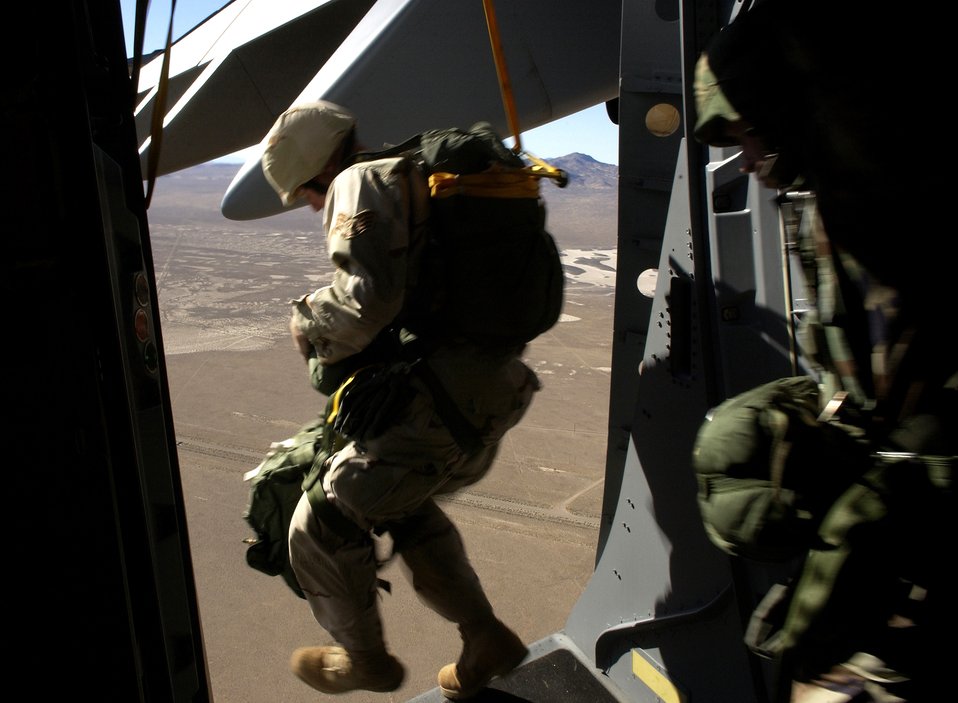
Mission Employment Exercise 06

An 820th Civil Engineer Red Horse member exits a C-17 Globemaster III Dec. 8, during a Mission Employment Exercise held at Nellis Air Force Base, Nev. The ME Phase is the final stage of a five-and a- half month course prior to Weapons School graduation.